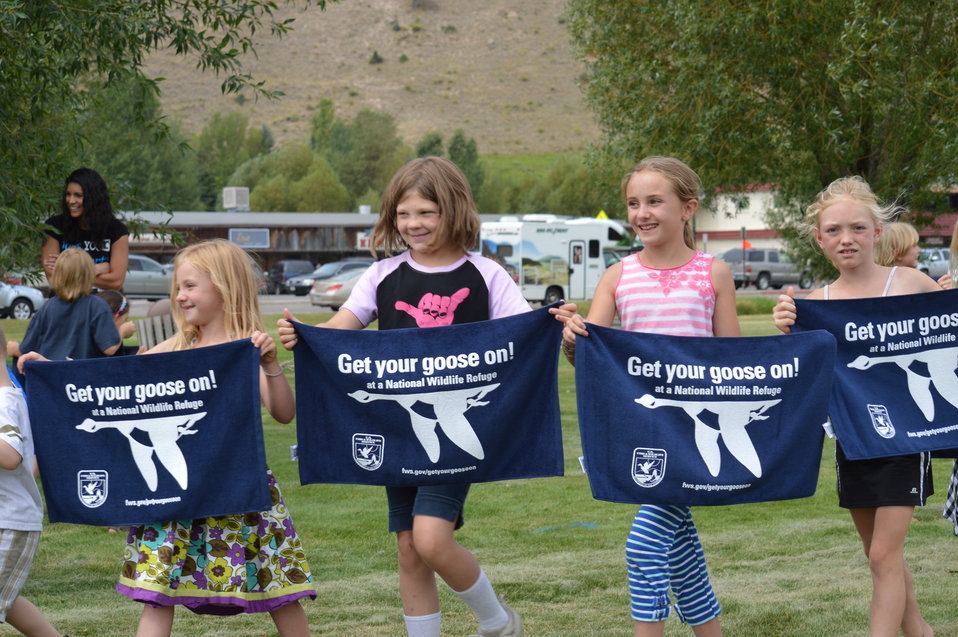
Get Your Goose On! - National Elk Refuge Style

On August 10, 2012 the U.S. Fish and Wildlife Service and Partners celebrated the 100 year anniversary of the establishment of the National Elk Refuge. In these photos, young attendees, along with Puddles the Blue Goose and the National Elk Refuge's mascot, showed us how to Get Your Goose On! with style.